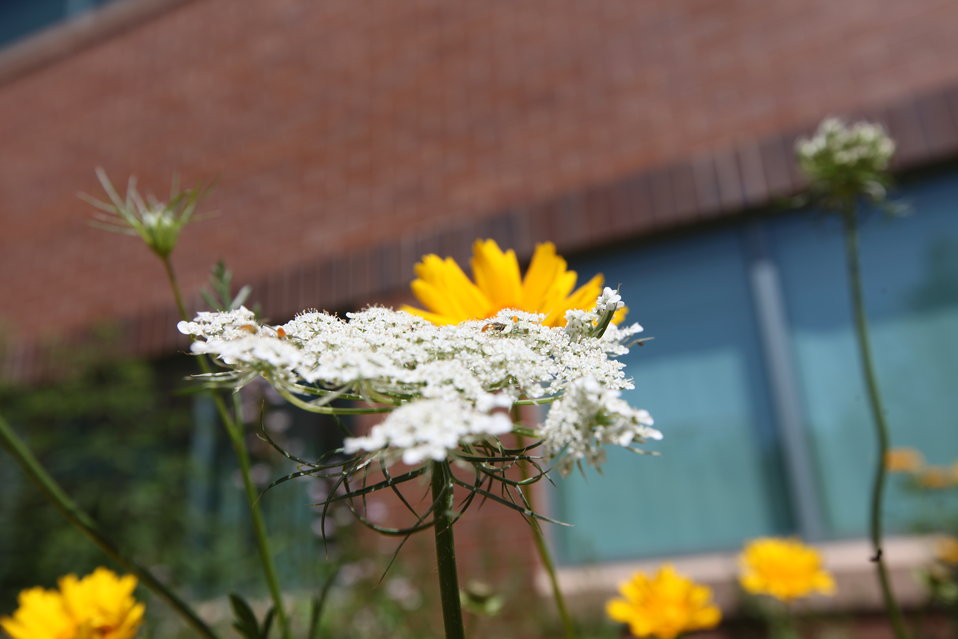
Pollinator Garden, Northeast Regional Office, Hadley, MA.